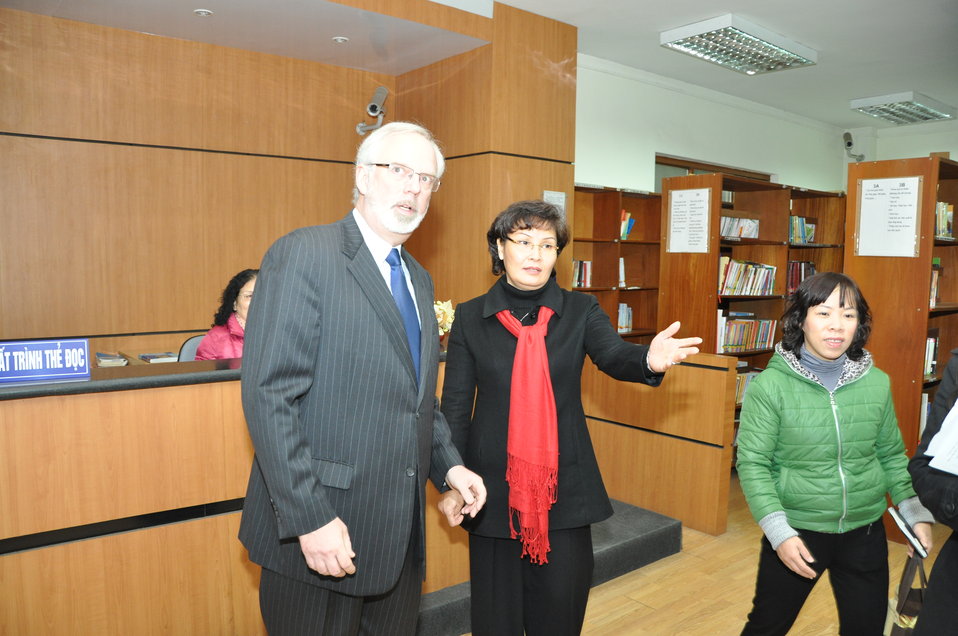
U.S. Ambassador David Shear visits the National Library

Safe Medicine Exhibition